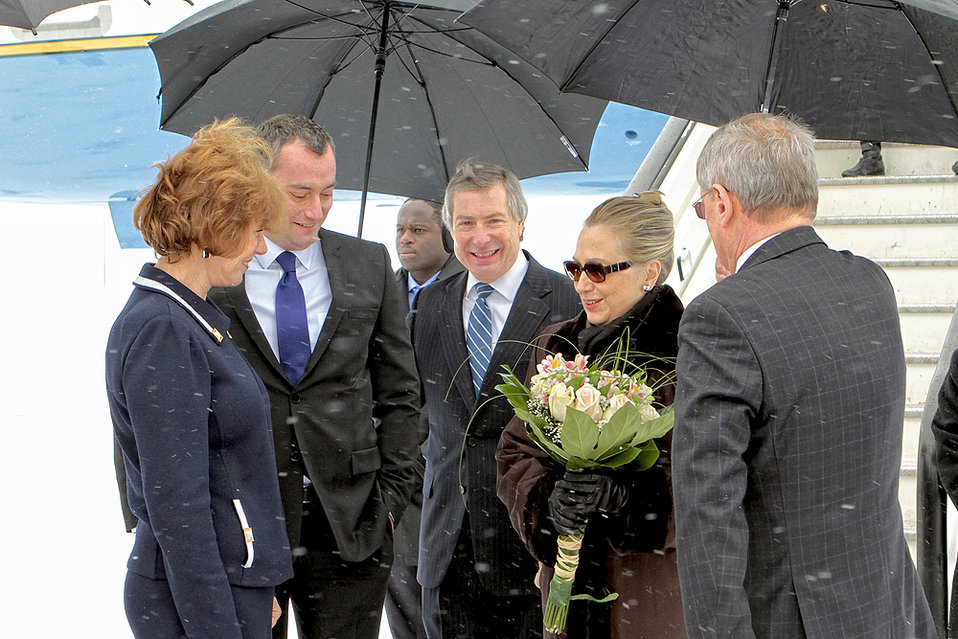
Secretary Clinton Is Welcomed to Bulgaria By Bulgarian Officials and Ambassador Warlick

U.S. Secretary of State Hillary Rodham Clinton is welcomed by Bulgarian Ambassador to the U.S. Elena Poptodorova, left; Bulgarian Foreign Affairs Minister Nikolay Mladenov, second from left; and U.S. Ambassador to Bulgaria James Warlick, center, to Sofia Airport in Sofia, Bulgaria, on February 5, 2012.